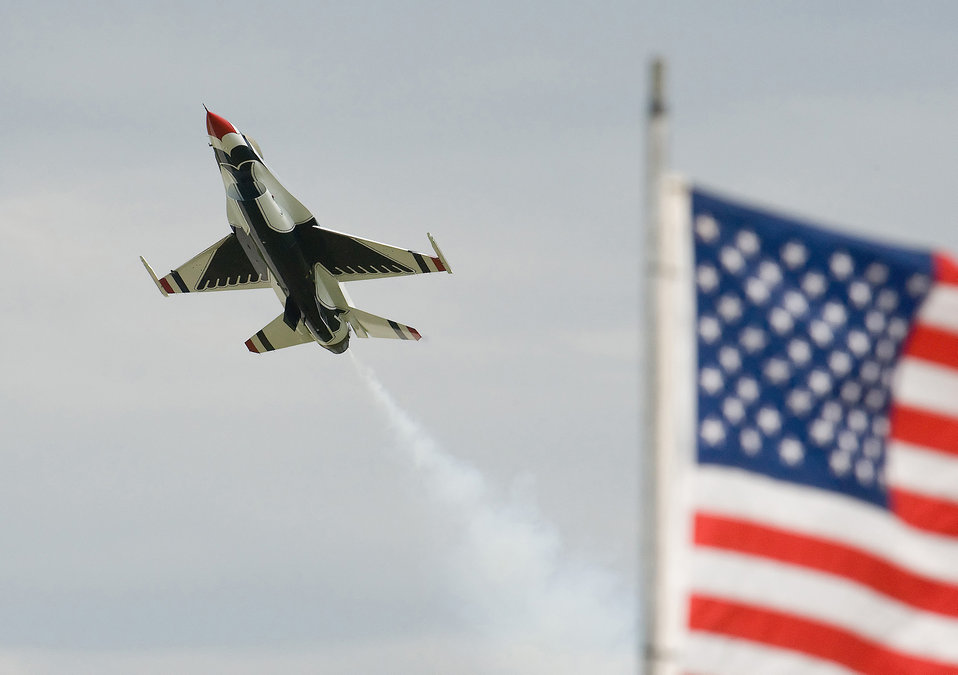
Flying solo

A lone Thunderbird performs maneuvers June 21 during the 2009 air show at Dover Air Force Base, Del. The Thunderbirds closed out the show.